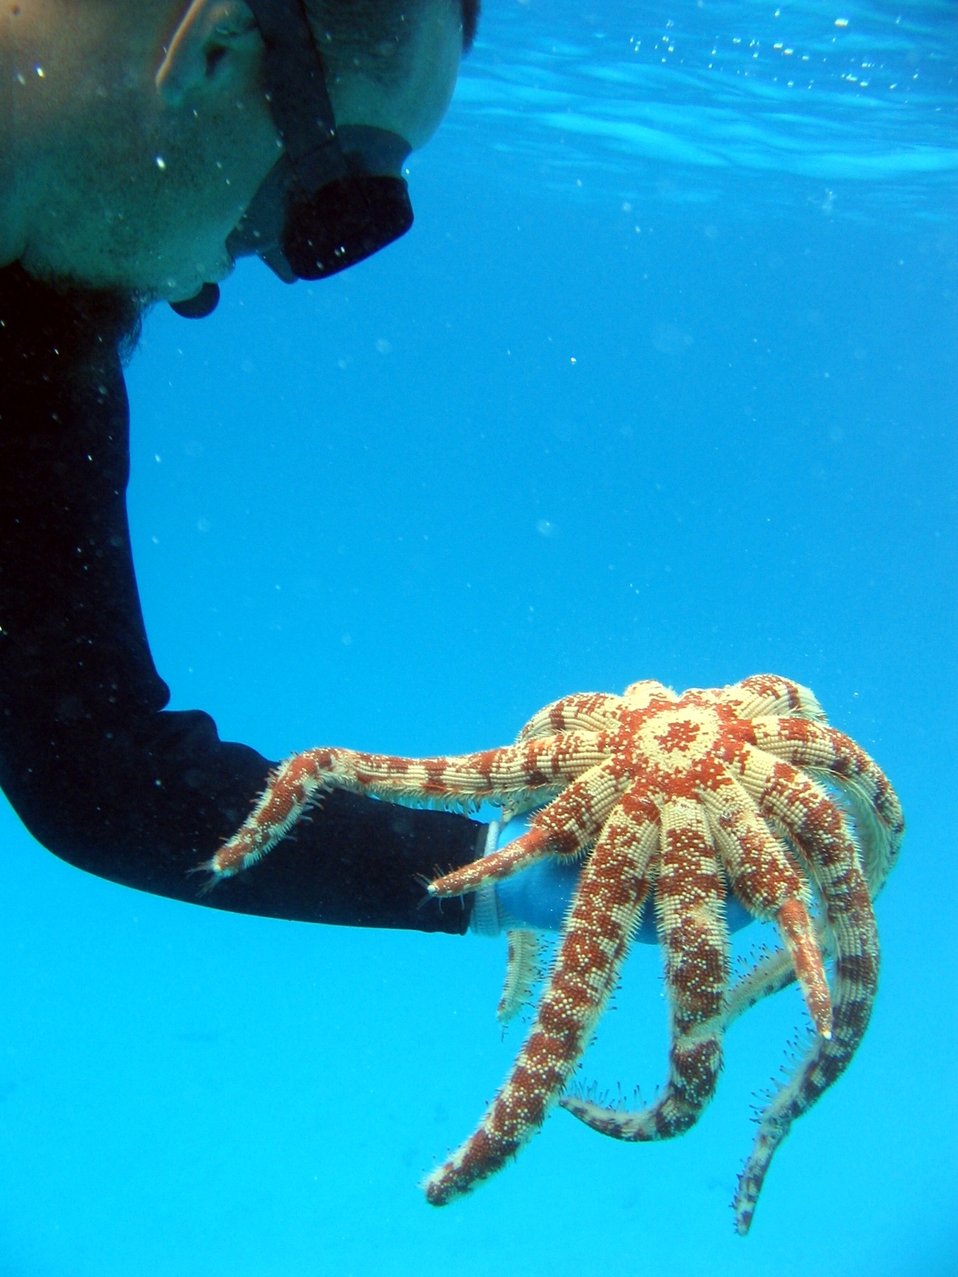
Top of Magnificent Star starfish (Luidia magnifica) - note regenerating legs.